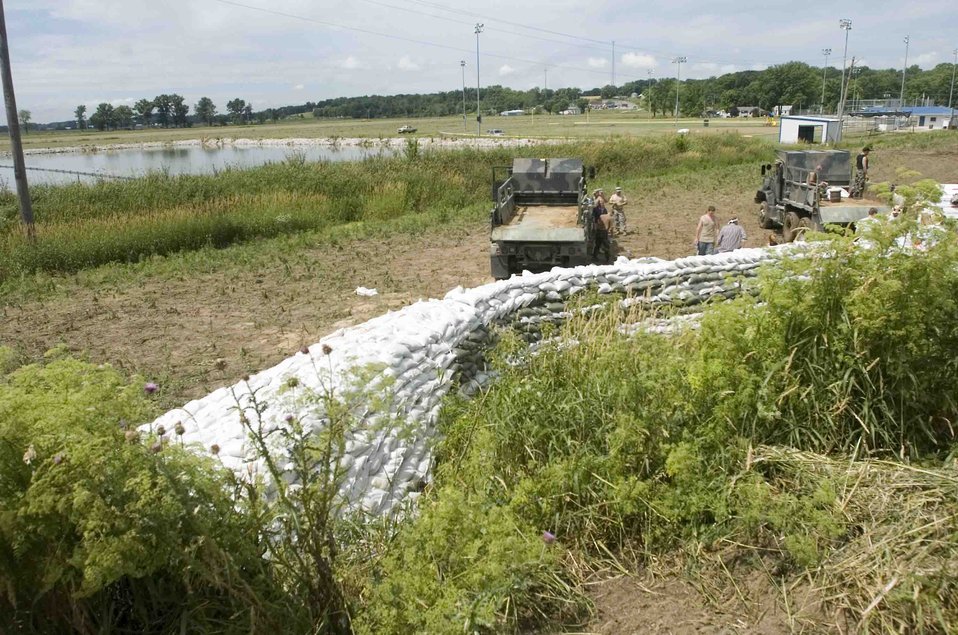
Missouri Air National Guard protects Winfield levee

A wall of sand bags is used to secure a section of a levee near Winfield, Mo., June 20. Missouri Air National Guardsmen from the 131st Fighter Wing in St. Louis work together with Soldiers from the Missouri Army National Guard's 1140 Engineering Battalion out of Cape Girardeau, Mo., to help the city of Winfield.